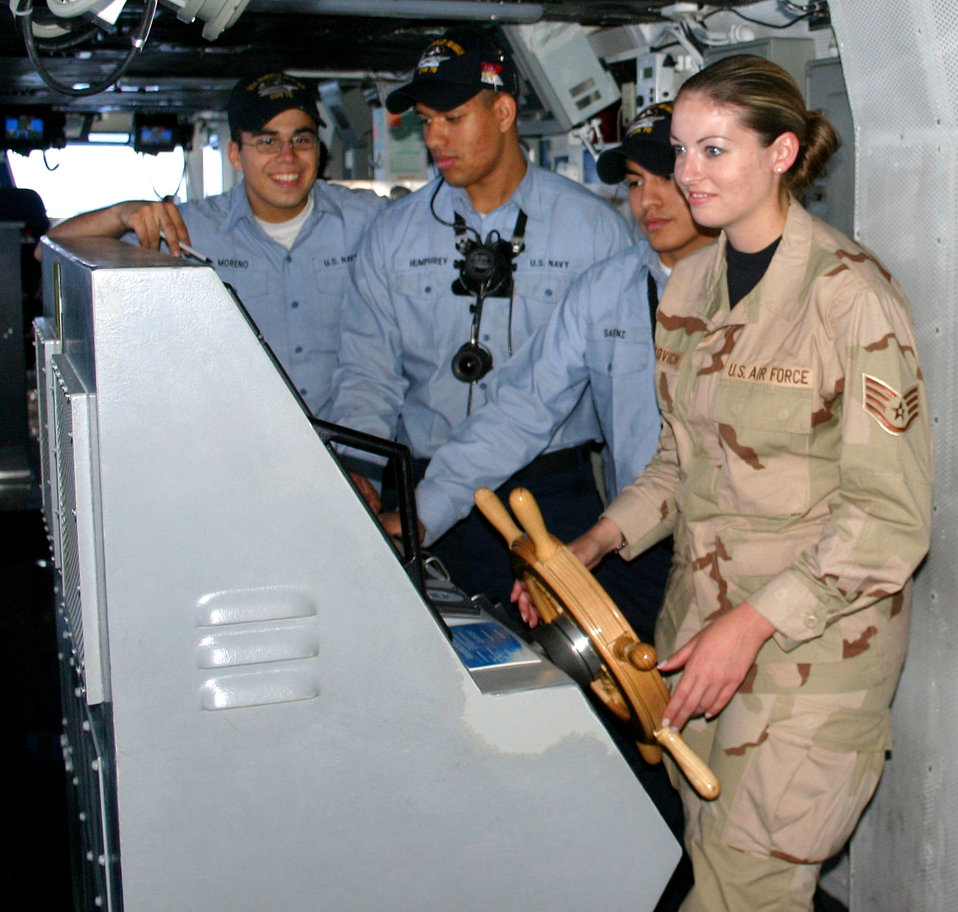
Same fight by land or sea

Sailors aboard the USS Ronald Reagan help Staff Sgt. Melissa Koskovich steer the ship 30 degrees to starboard during an orientation tour Thursday, March 30, 2006. Ten Airmen from Southwest Asia came aboard the ship for a two-day visit aimed at fostering joint relations throughout the area of operations.